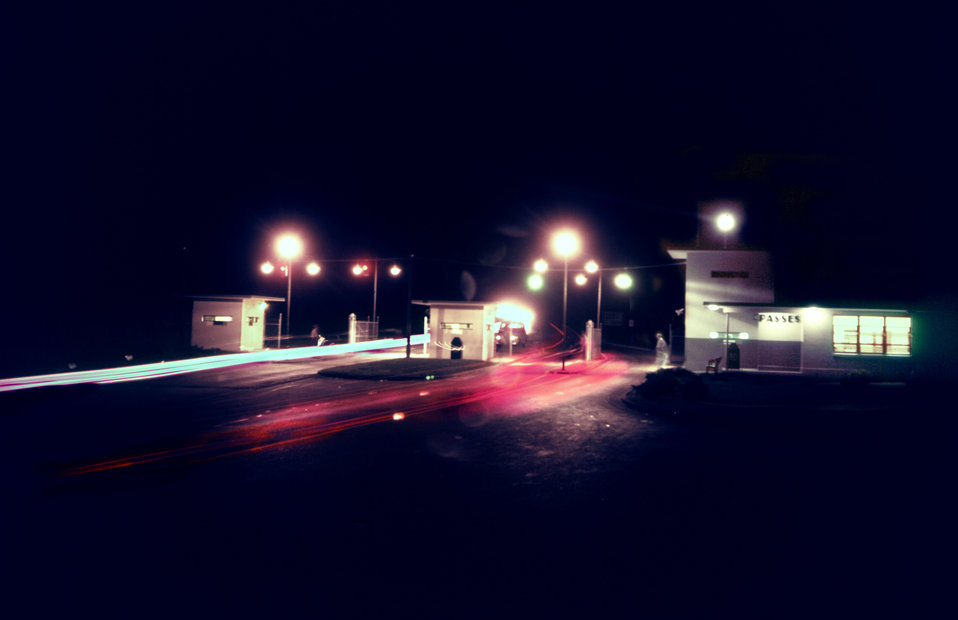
Last Night With Guards on Duty at Midway Gate Oak Ridge

58-1208 DOE photo Ed Westcott 7-21-1958 Oak Ridge Tennessee